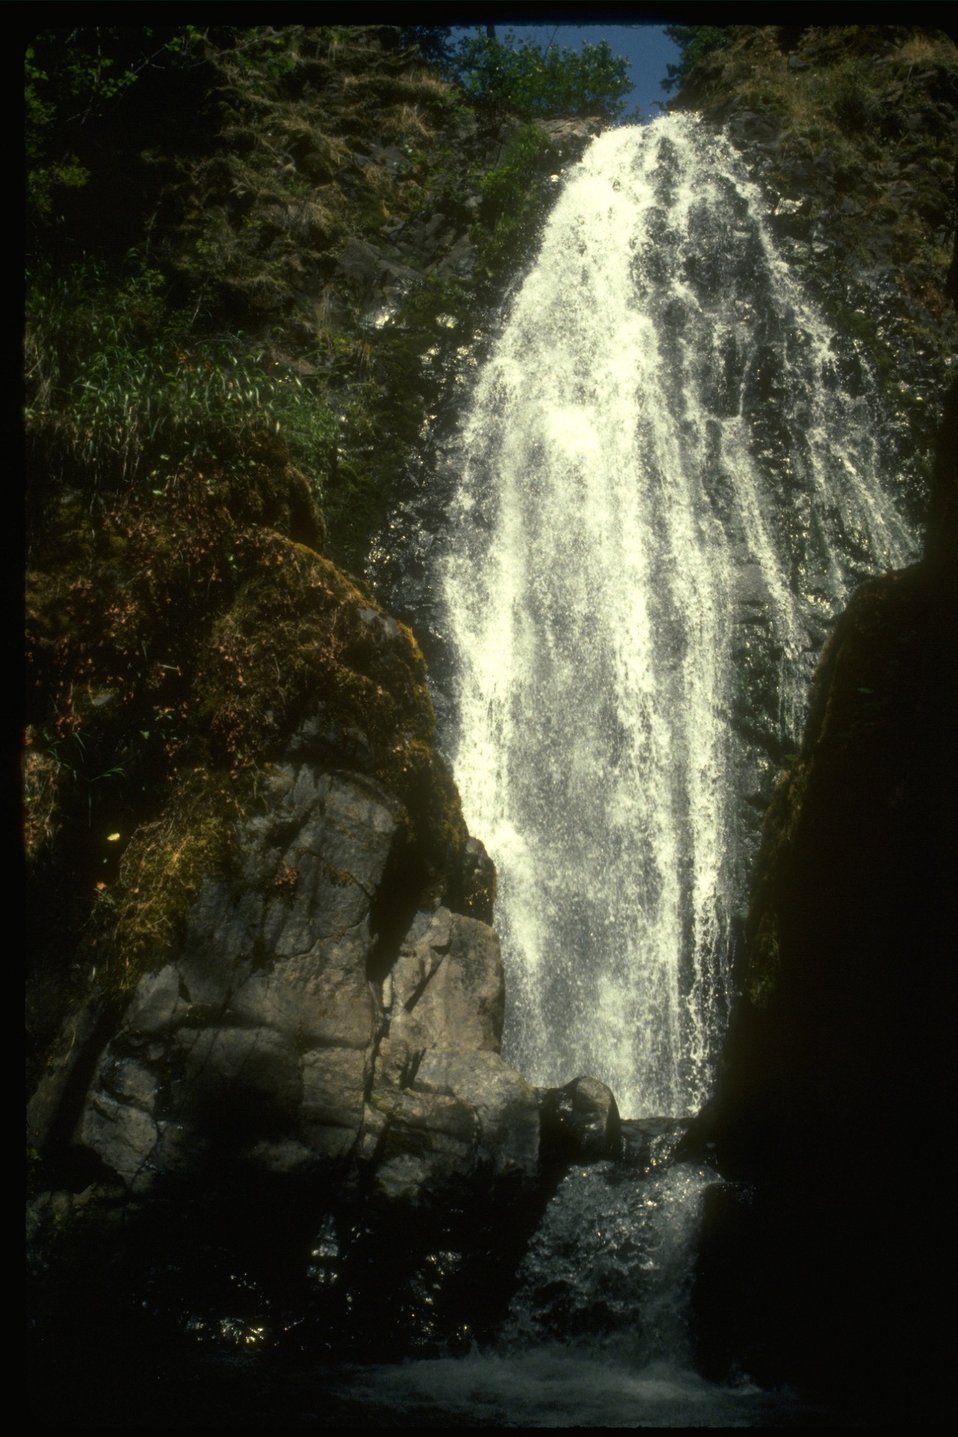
Susan Creek Falls on Susan Creek.